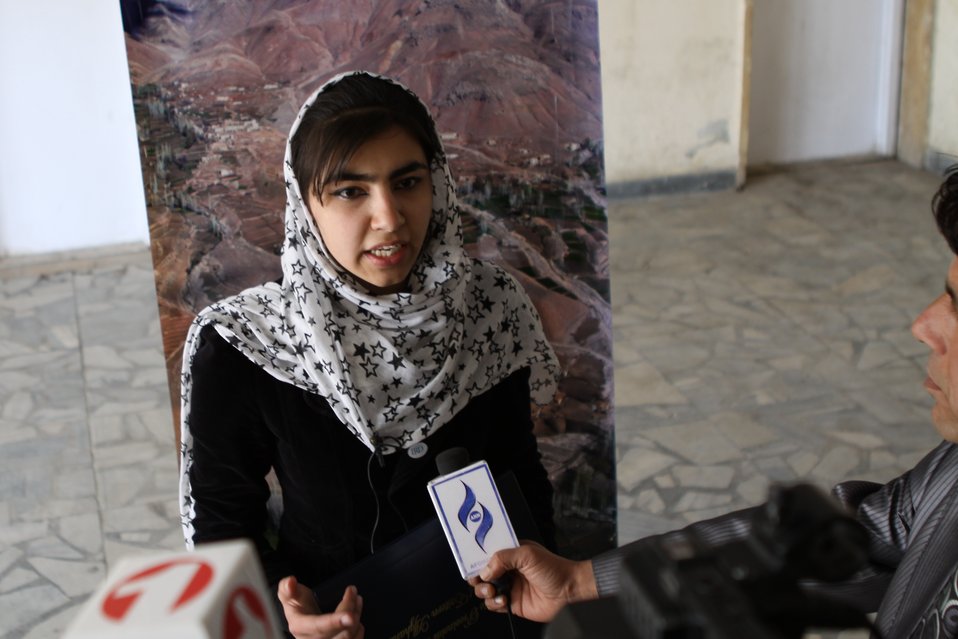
Female University Students Complete Internship

Kabul, Afghanistan | March 16, 2011 – In response to a demand for qualified Afghan engineers, Kabul University celebrated completion of an intensive five-month Mentor Protégé Training Program today by 10 female fourth year university students. The Training Program is a joint effort between the Government of the Islamic Republic of Afghanistan, the U.S. Agency for International Development (USAID), and the Universities of Kabul, Kandahar, Alberoony in Kapisa, Shiekh Zayed in Khost. The graduation ceremony highlighted collaboration with these national institutions in building the technical skills of young Afghans, made possible by USAID.

Four of the interns are engineers, while the remaining six are from the faculties of computer science, economics, and psychology.

Speaking about the event, H.E. Minister of Public Works Abdul Qudus Hamidi said, “The future of Afghanistan lies in developing the skills of our youth, and the engineering skills of these graduates today represent a small but important step forward for the country.”

Keynote speakers at the ceremony included H.E. Deputy Minister of Higher Education Abdul Rahim; USAID Senior Deputy Mission Director Robert Hellyer; and Chancellor of Kabul University Professor Hamidullah Amin. Approximately 150 people, including current and former students attended the graduation.

Launched last year, the Mentor Protégé Training Program has provided qualifying students the opportunity to intern with USAID’s Strategic Provincial Roads-South and East Afghanistan project and gain practical experience in a real work environment. The goal of the program was to offer interns the opportunity to gain hands-on experience to reinforce their formal studies. A total of 30 students from four national universities have benefitted from this program.

“The promotion of women’s rights is integrated into the overall U.S. Government development strategy and can be found in key programs, including education, healthcare, security, rule of law, political participation, agriculture, and economic development,” said Robert Hellyer. “The U.S. Government is committed to the Afghan leadership of programs that directly enhance development, particularly as it relates to women’s issues.”

This event also highlighted the learning achievements of students and emphasized the importance of hands-on internship programs. The curriculum is designed to instill students with the knowledge and confidence to qualify for engineering positions upon completion of their fourth year at their respective universities.